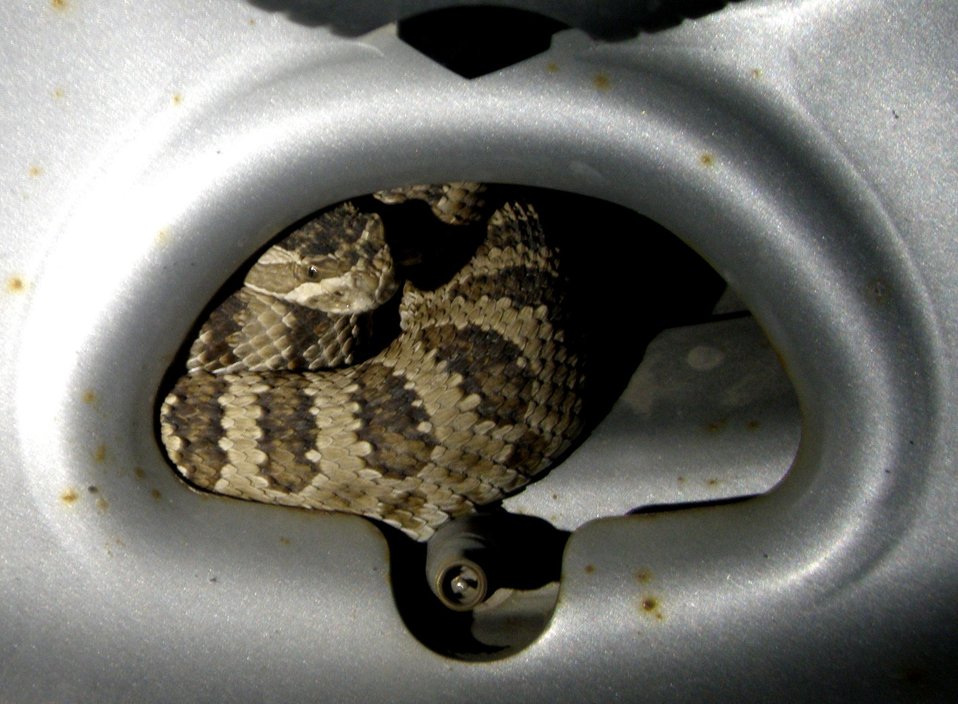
Idaho Recovery Act Workers Complete Last of Nine Transuranic Waste Transfers

A rattlesnake temporarily disrupted what had been a normally smooth operation when it coiled itself in the wheel spokes of a pickup truck. It then slithered into the sagebrush and work resumed promptly.

American Recovery and Reinvestment Act workers successfully transferred 21 containers of transuranic waste — each weighing up to 15 tons — to a facility for repackaging and shipment to a permanent disposal location.
With the help of nearly $90 million from the Recovery Act, the workers recently completed the ninth and final shipment of the containers from the Materials and Fuels Complex to the Idaho Nuclear Technology and Engineering Center (INTEC).